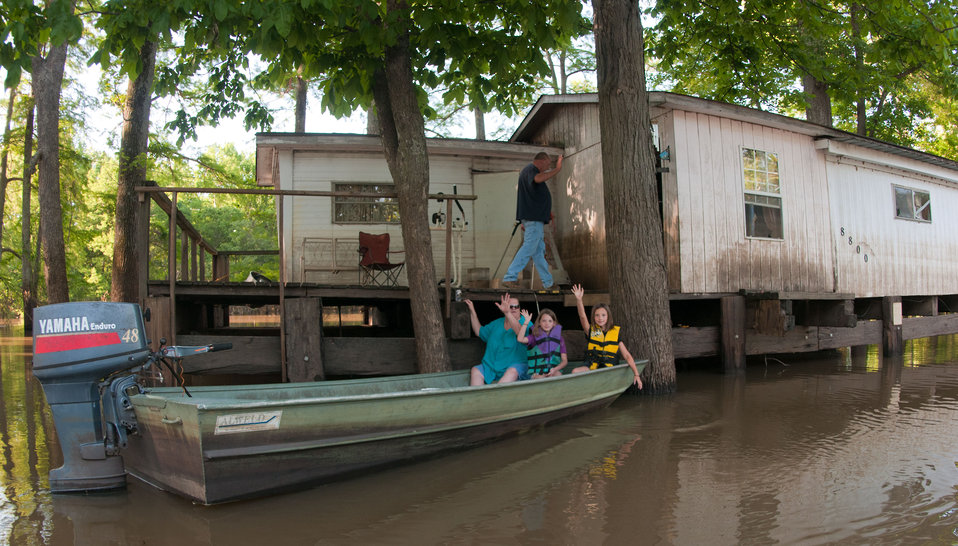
Despite tha great challenges facing Robert (blue t-shirt) and Brenda Moffatt (left) and their grand daughters Lindsey (10, yellow life jacket) and Katlyn (9) give a friendly wave good-bye from their home near Open Lake, in Lauderdale County, TN on Saturday, May 21, 2011.